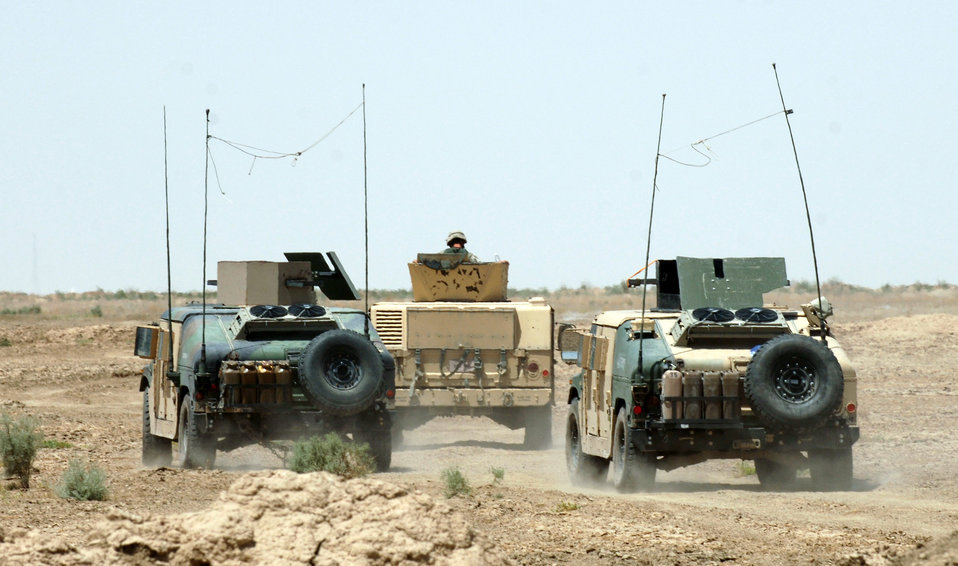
Convoy

ALI BASE, Iraq -- A security forces convoy heads across the desert as part of an operation here recently. The operation is an effort to give the local Bedouins much needed food and clothing. They are assigned to the 407th Expeditionary Security Forces Squadron